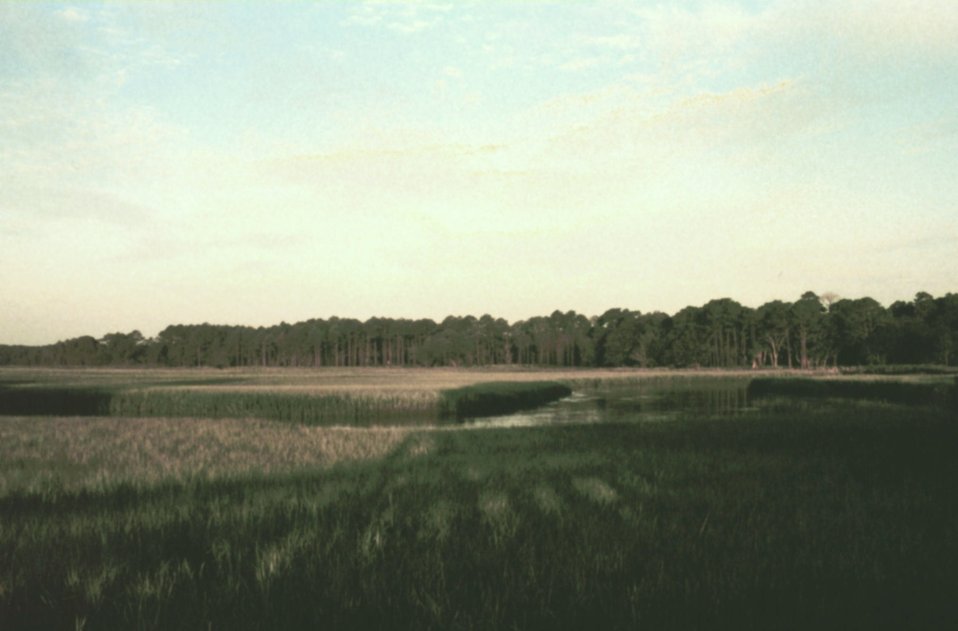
Salt marsh on the north end of Sapelo Island.